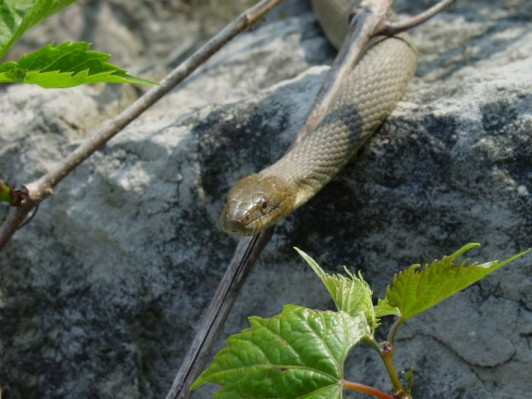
Recovered Lake Erie watersnake (Nerodia sipedon insularum)